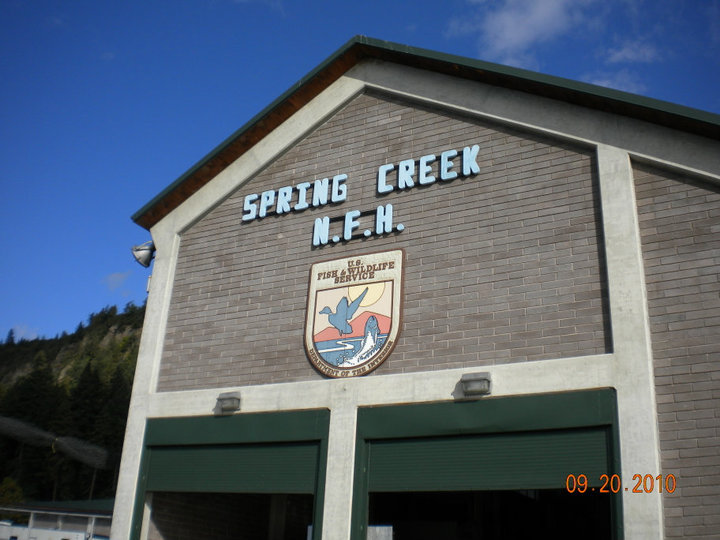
Spring Creek NFH